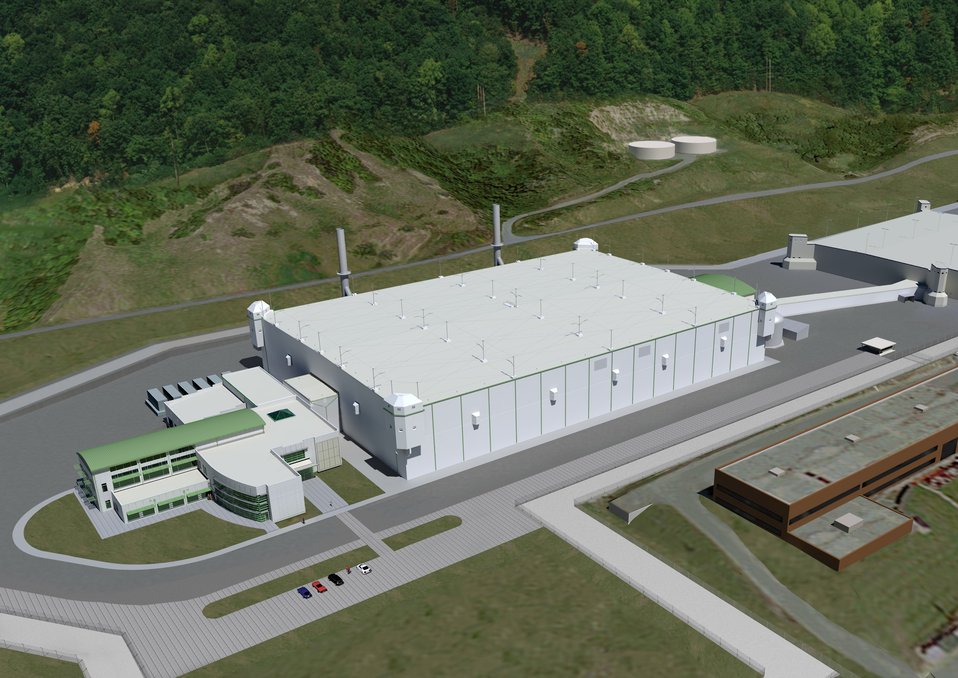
Uranium Processing Facility is one of two facilities at the Y-12 National Security Complex, whose joint mission will be to accomplish the storage and processing of all enriched uranium in one much smaller, centralized area.

The facility will be a state-of-art, consolidated facility for enriched uranium operations including assembly, disassembly, dismantlement, quality evaluation, and product certification.